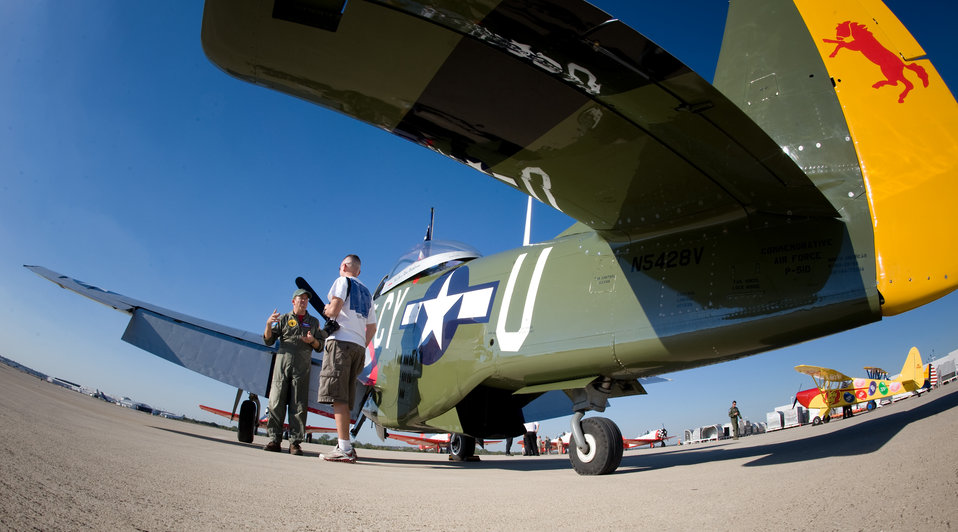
Warrior Flight